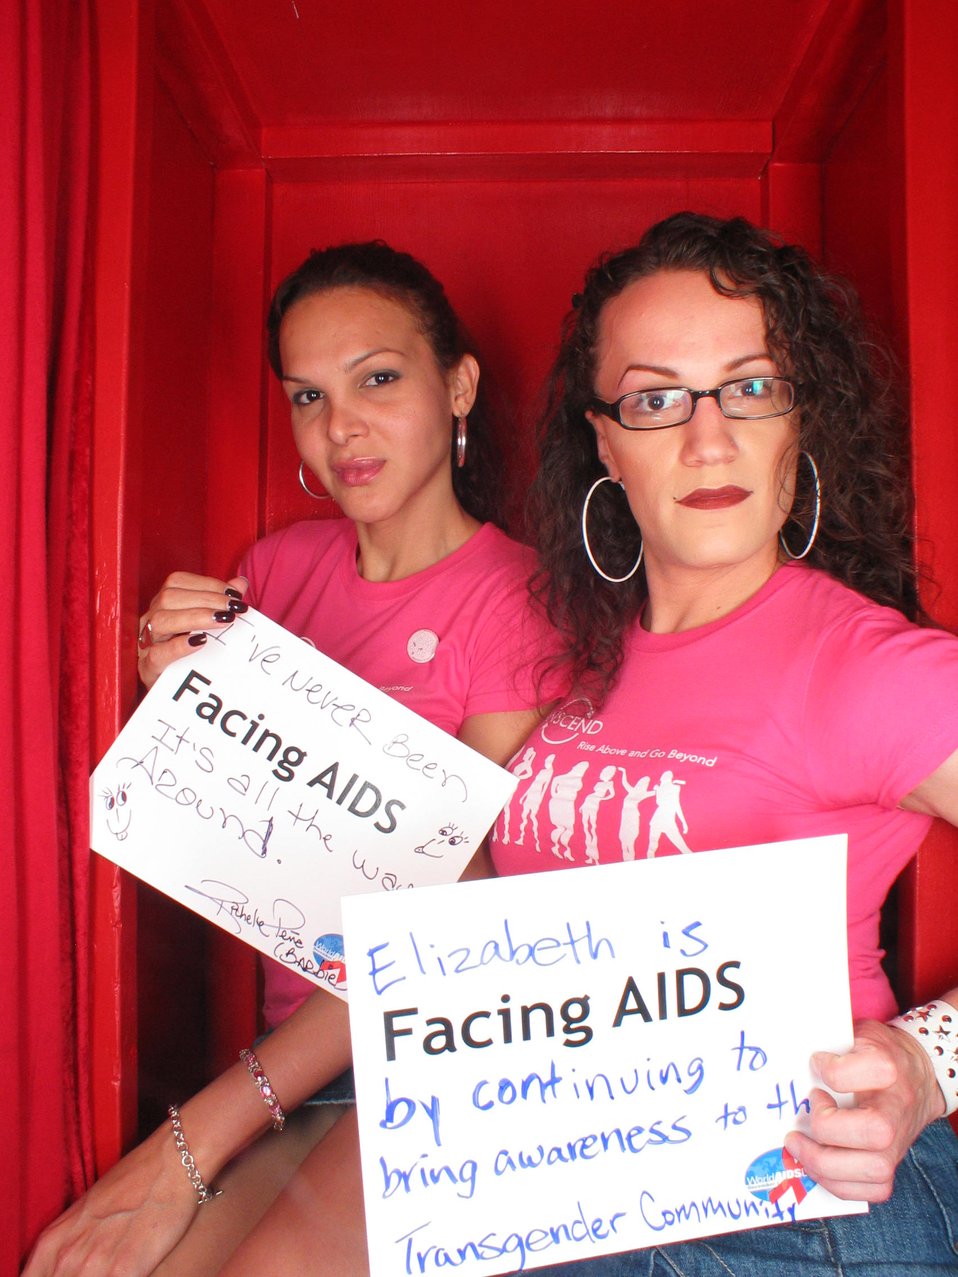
Facing AIDS by continuing to bring awareness to the transgender community.